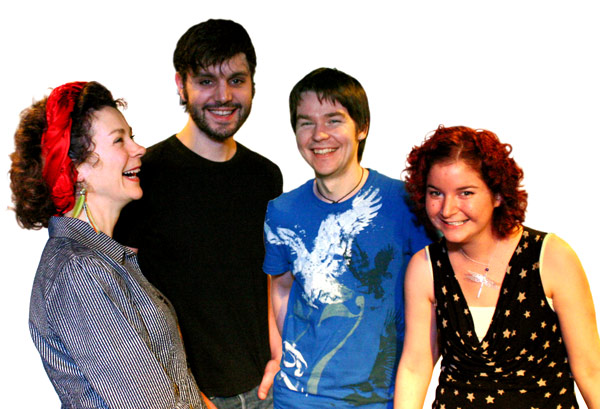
Uiscedwr's short-lived fourpiece line-up.